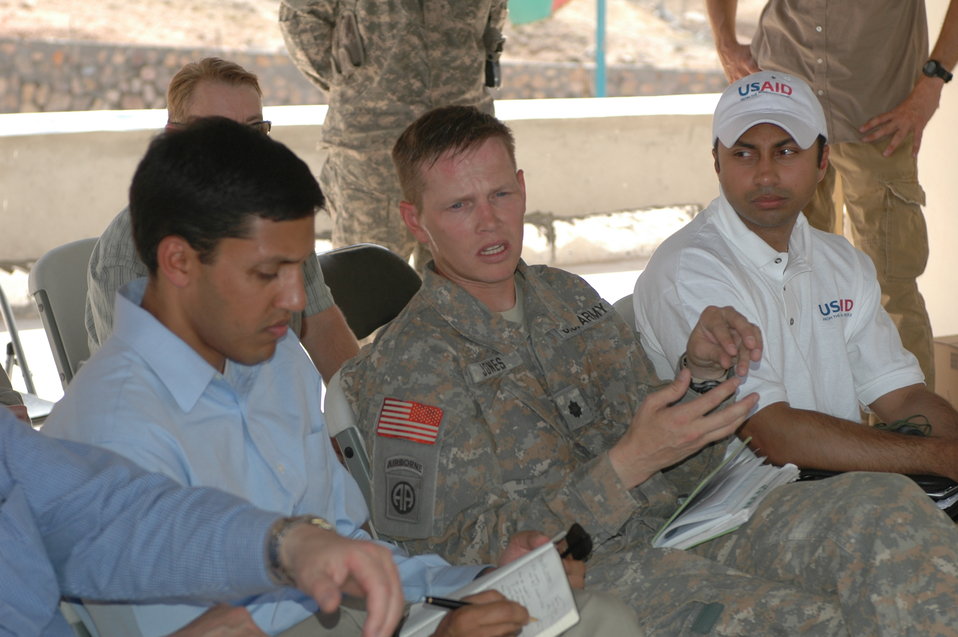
Dr Shah Visits Kandahar April 9, 2010